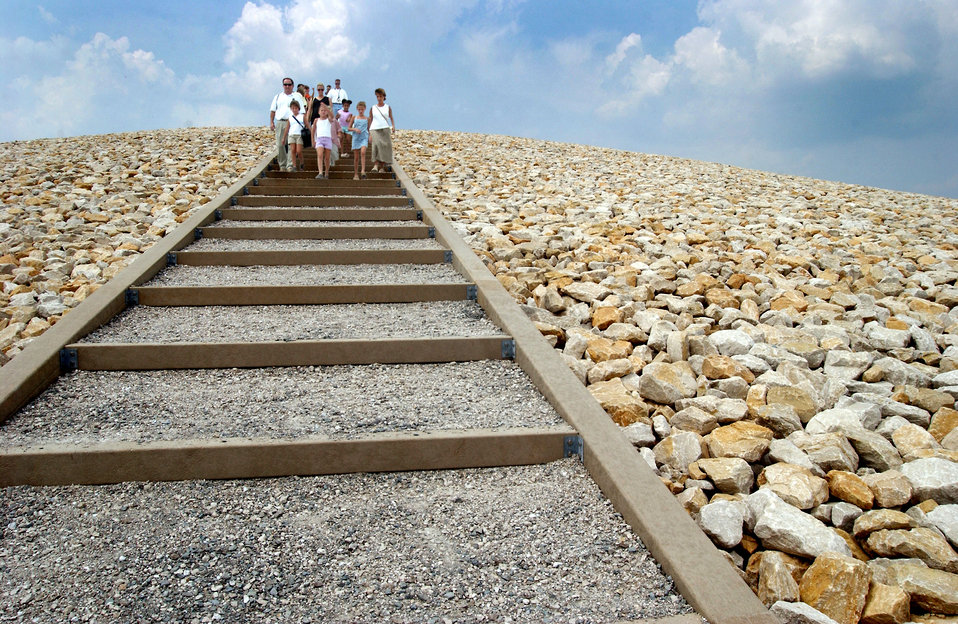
2

WeldonSpring